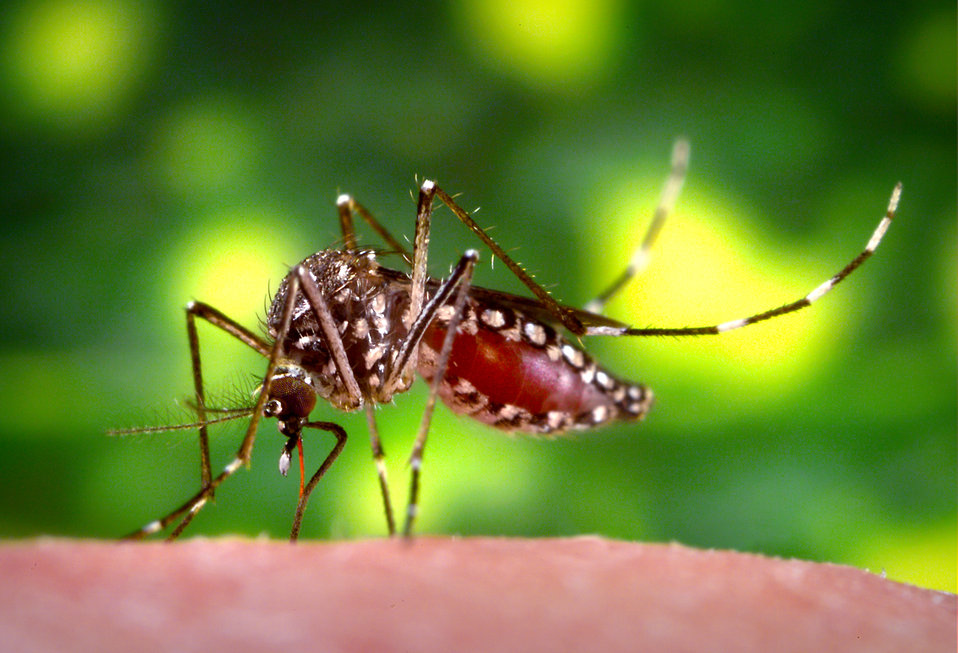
This 2006 image depicted a female Aedes aegypti mosquito as she was obtaining a blood-meal from a human host through her fascicle, which had penetrated the host skin, was reddening in color, reflecting the blood's coloration through this tubular structure. In this case, what would normally be an unsuspecting host was actually the CDC's biomedical photographer's own hand, which he'd offered to the hungry mosquito so that she'd alight, and be photographed while feeding. As it filled with blood, the abdomen became distended, stretching the exterior exoskeletal surface, thereby, causing it to become transparent, allowing the collecting blood to become visible as an enlarging intra-abdominal red mass.